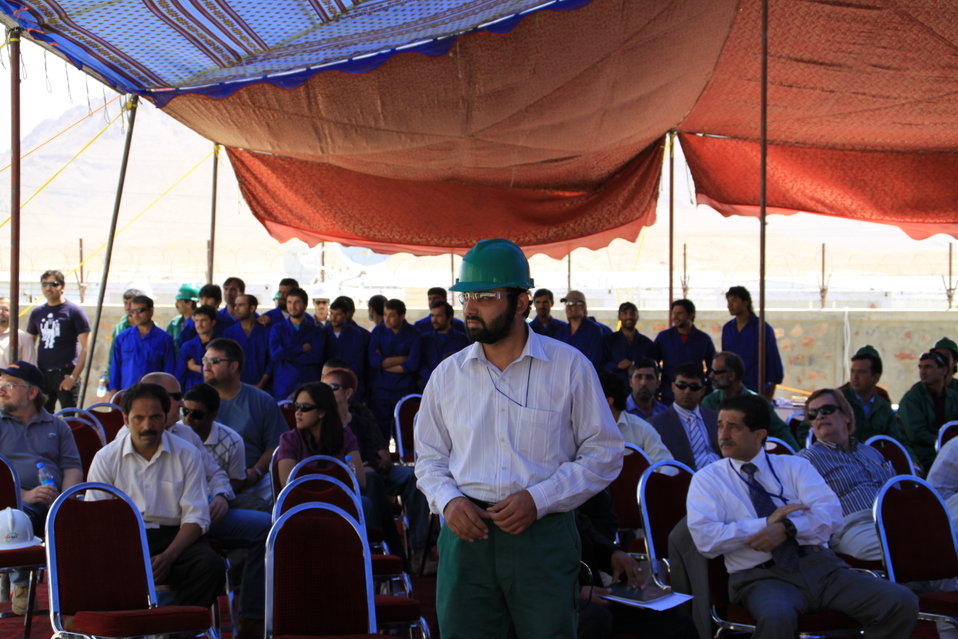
105 MW Tarakhil Power Plant Handover